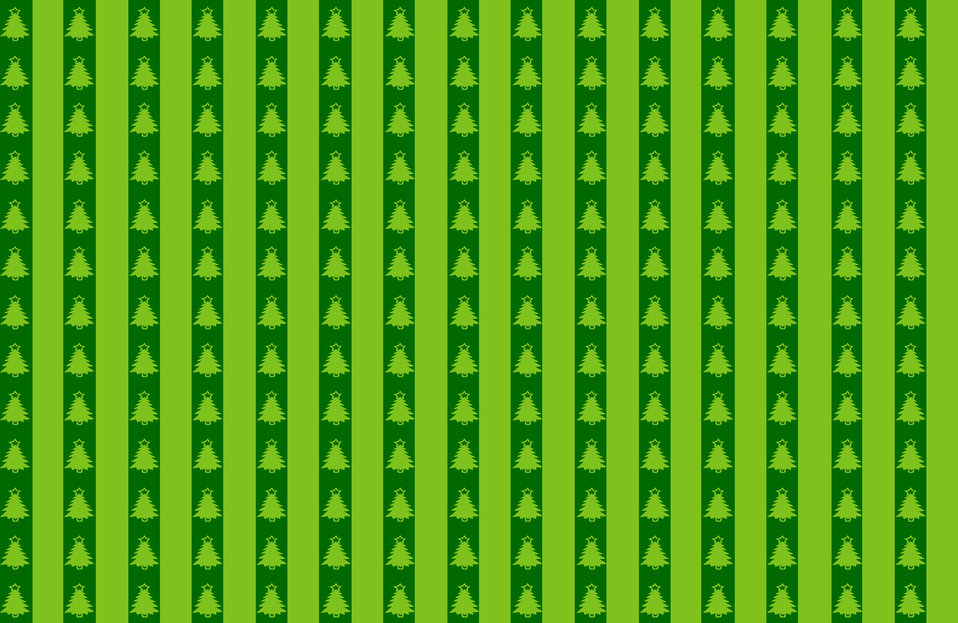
Christmas tree green background

Christmas trees on a striped green background.